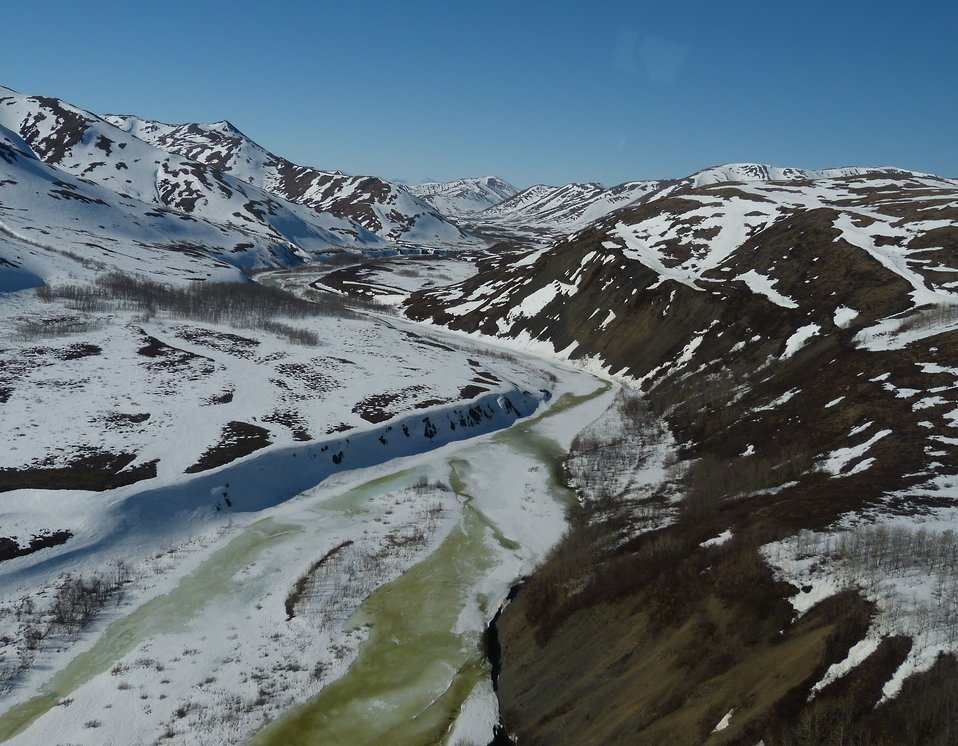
Kilbuck Mountains May2013 KSowl

Cliff-nesting raptor survey, Kilbuck Mountains, Yukon Delta National Wildlife Refuge

Photo credit: Kristine Sowl,
USFWS, YDNWR